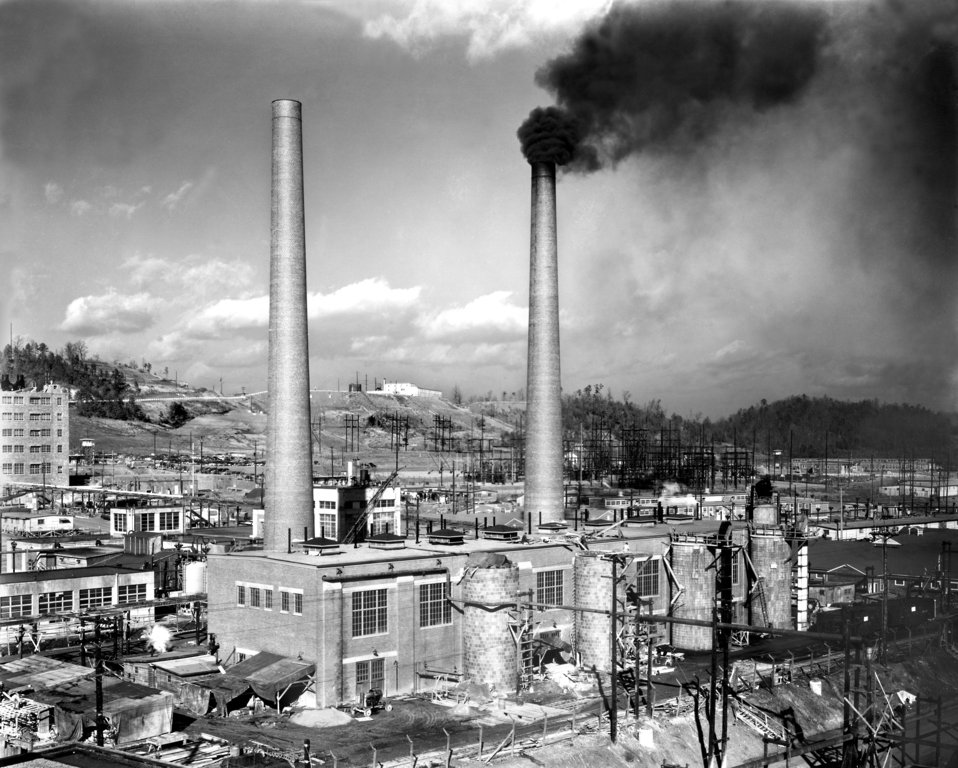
Completed Addition To Boiler Plant Y-12 Oak Ridge 1944

Y-12-40 DOE photo Ed Westcott 12-1944 Oak Ridge Tennessee